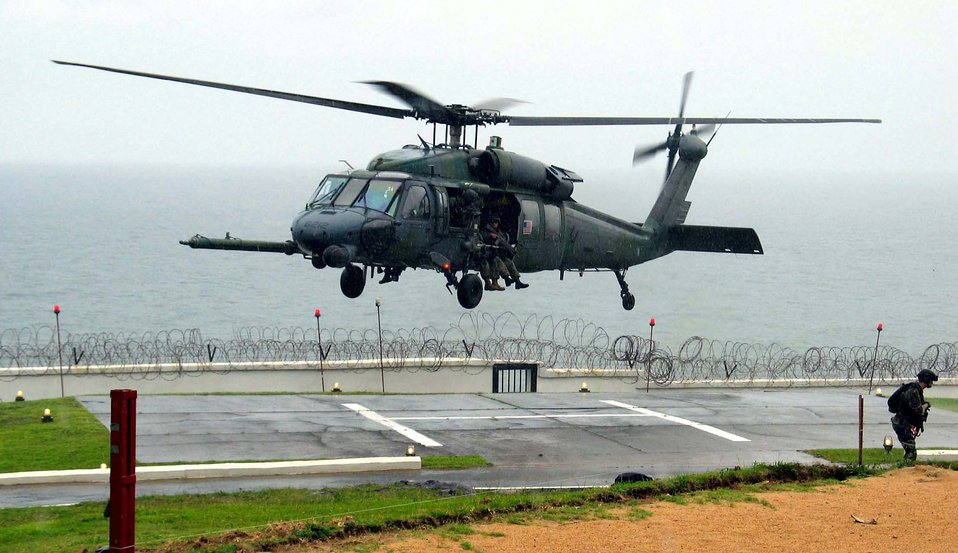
Embassy landing

MONROVIA, Liberia -- An Air Force HH-60G Pave Hawk helicopter drops off Marines with an antiterrorism security team at the U.S. Embassy here. The helicopters also evacuated 23 people during the mission. The helicopters are deployed to Lungi, Sierra Leone, as part of the 398th Air Expeditionary Group. The group provides recovery and emergency evacuation capabilities in Liberia.